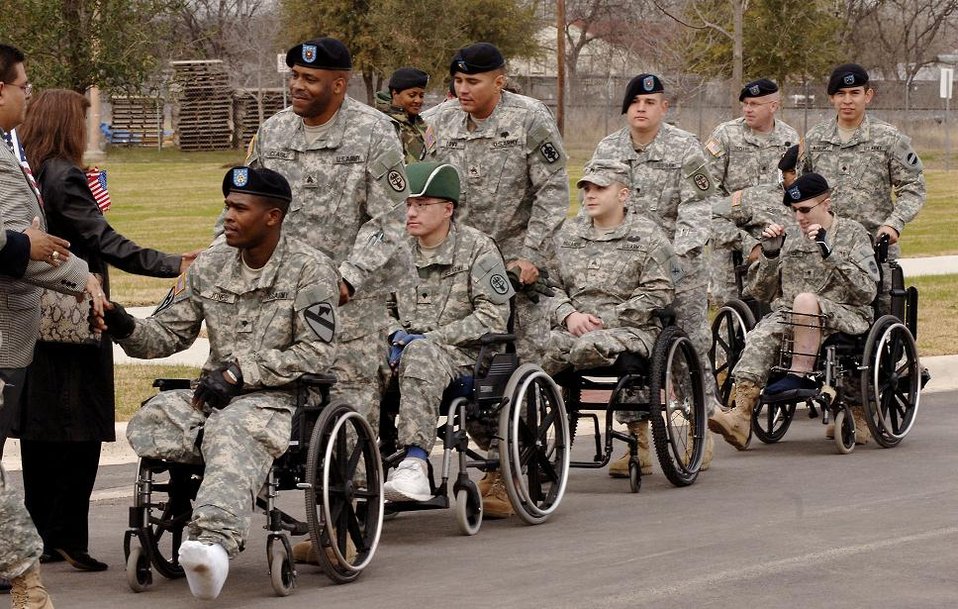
Center for Intrepid

Servicemembers who are amputees, burn victims or otherwise severely injured in combat operations were guests at the unveiling of the new Center for the Intrepid in San Antonio Jan. 29.